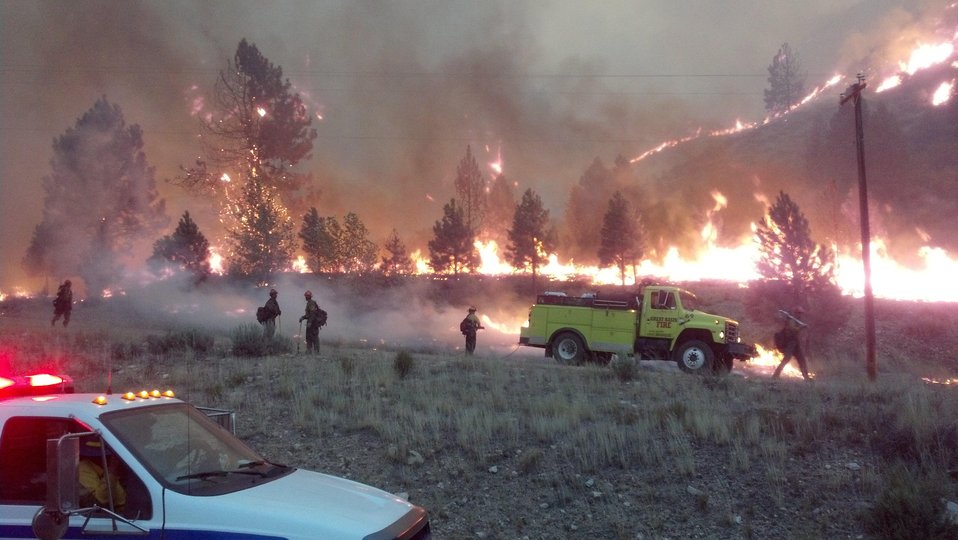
Firefighters with engine support extinguish flames around the perimeter of the Elk Complex Fire. The Elk Complex Fire in the Boise National Forest near Pine, ID began on Aug. 08, 2013 by lightning has consumed approximately 111,977 acres and is approximately 10% contained.